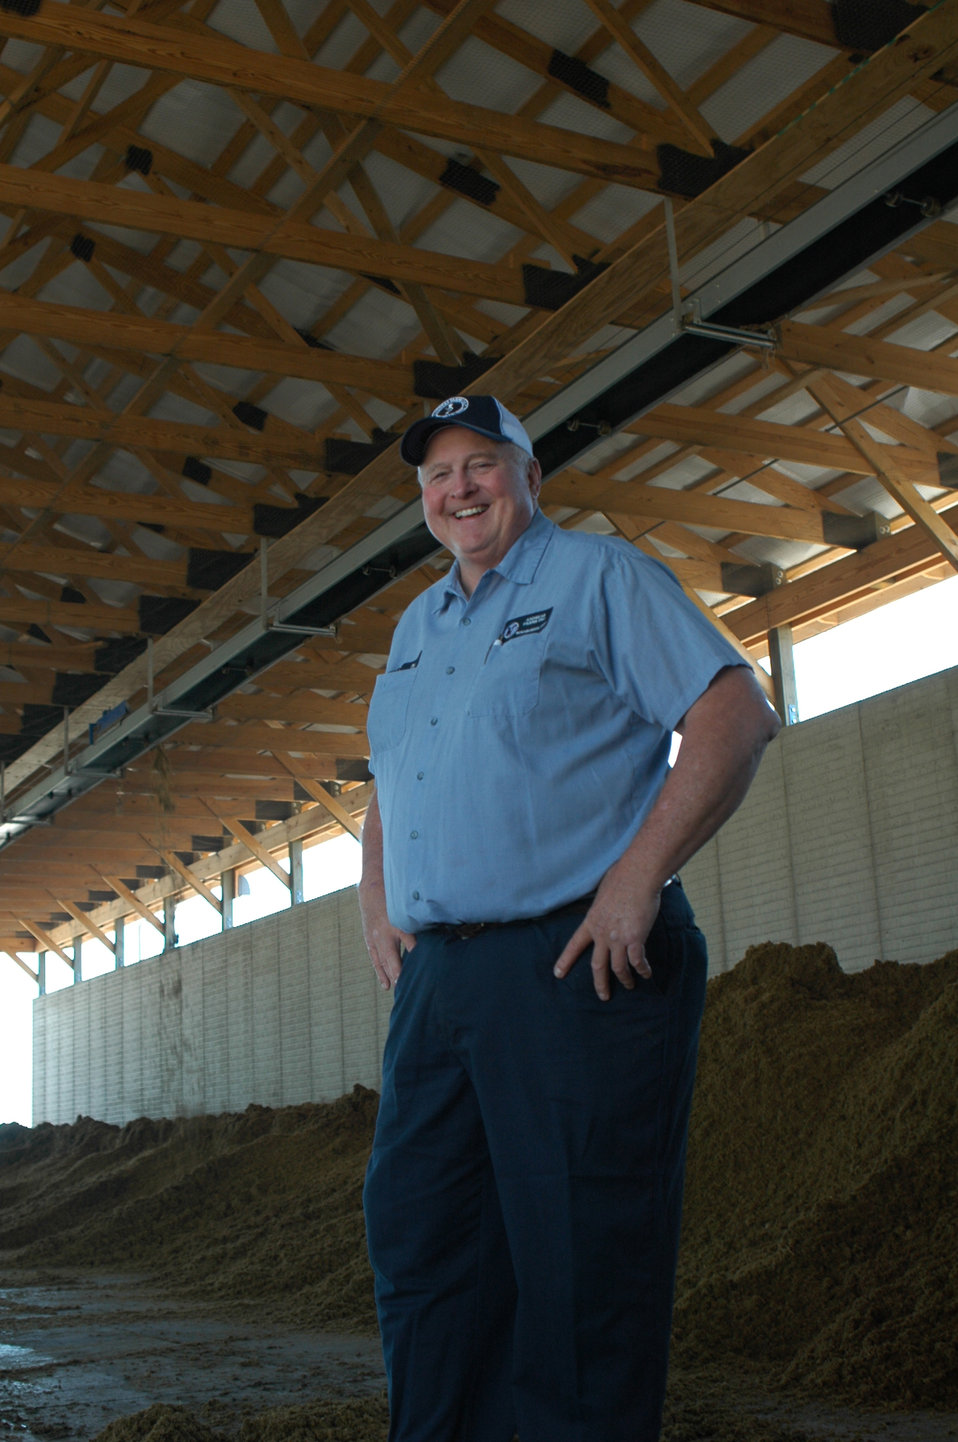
NWQI SUCCESS STORY WITH DAN ANDREAS

Ohio farmer Dan Andreas strives to improve the water quality in his watershed.